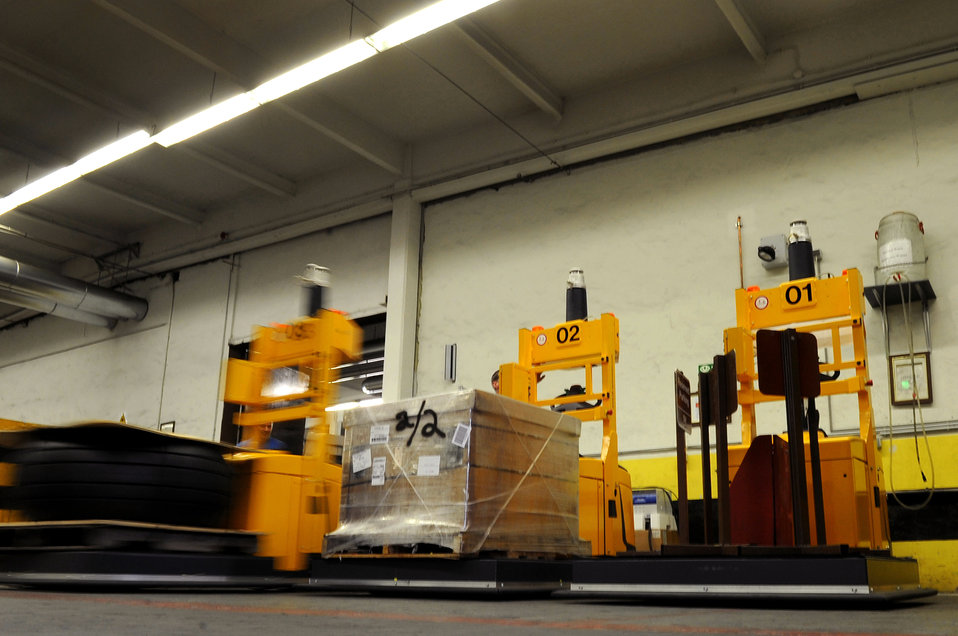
AGV

An automated guided vehicle parks in its charging location according to an operator's command during a showcase of the new equipment June 17, 2010, at Ramstein Air Base, Germany. Members of the 86th LRS material management flight are the first to use these AGVs in the United States Air Forces in Europe Command.